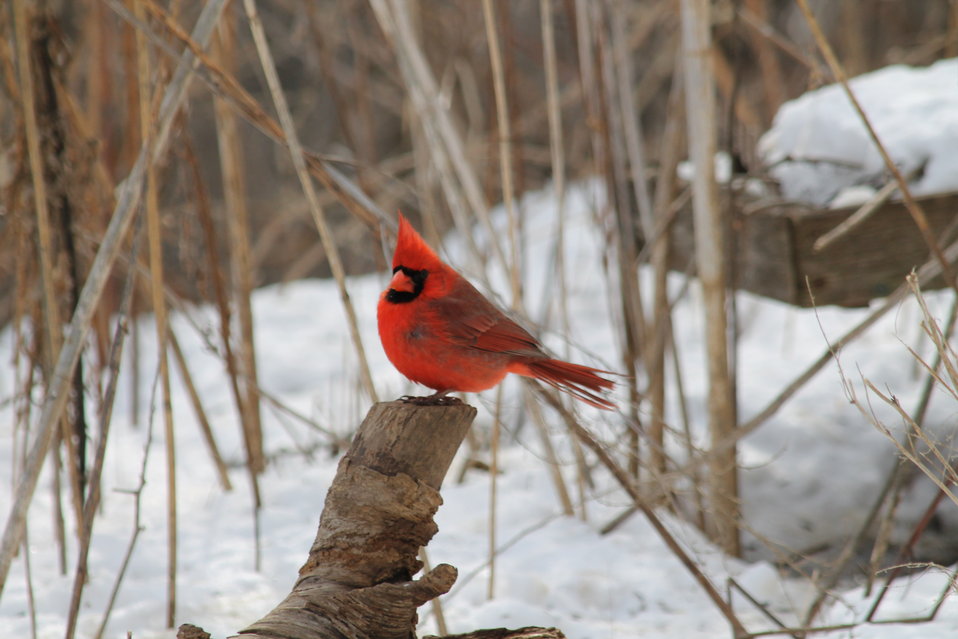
Northern cardinal